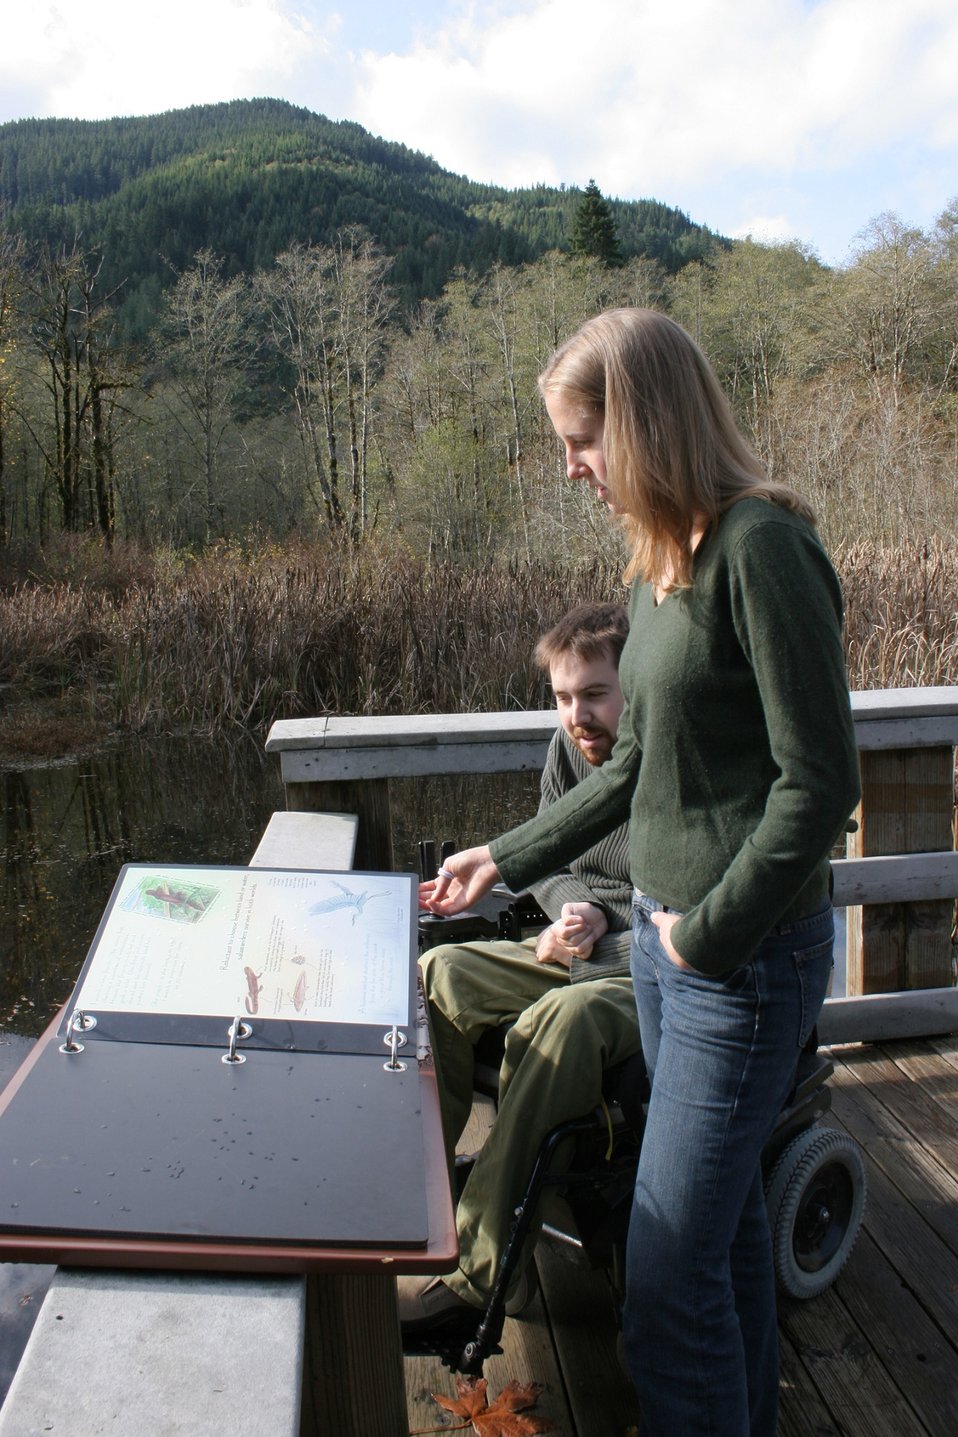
Emily Bubbers and Ian Ruder visit the Wetland Boardwalk Trail at BLM's Wildwood Recreation site near Mt. Hood.